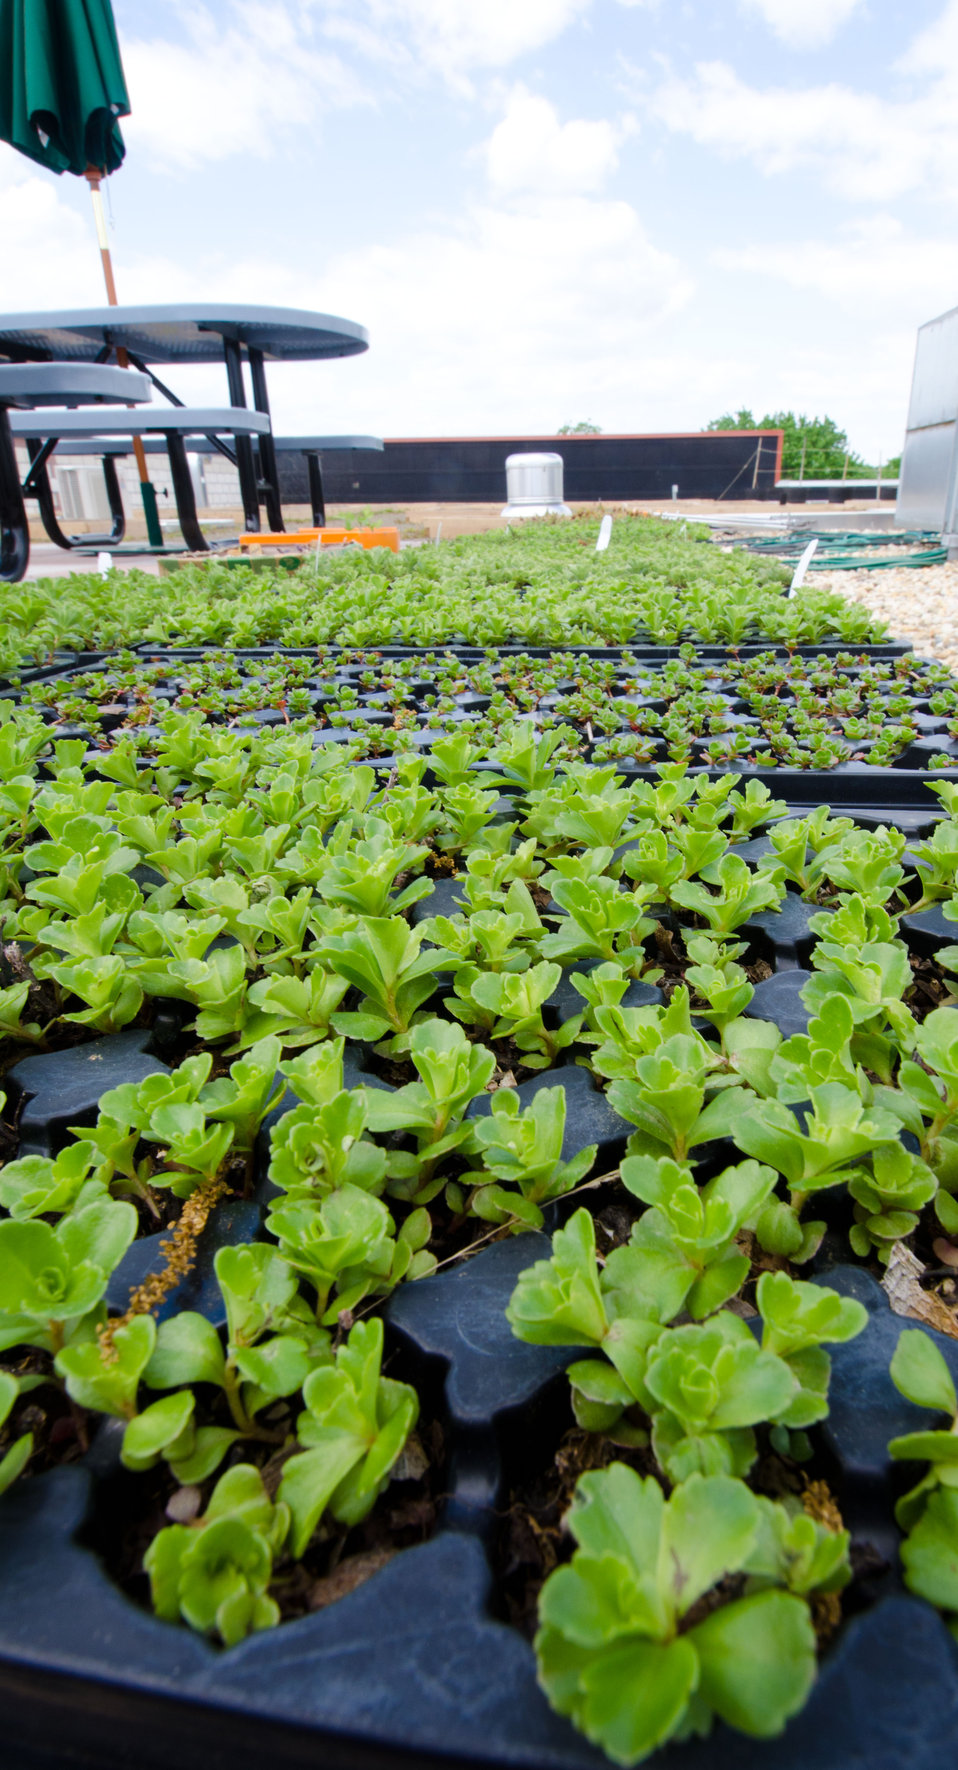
Rooftop vegetable garden is ready for planting at Bread for the City in Northwest Washington, DC, on Friday, April 29, 2011. The garden features specialized soil made of organic and inorganic material for rooftop gardens. The 30 wooden planters are about 4 inches tall but are not separate from the soil covering the roof, so there is a 10' depth to the plant in the boxes. Ground cover plants are already on site and await a team of volunteers to plant them in the walkways to retain moisture and help keep the soil temperature stable. This will be the largest of this kind in the Metro DC area. In addition to supplementing the fresh vegetable given to the community, it will also allow local residents to grown produce that is not normally marketed in this area.